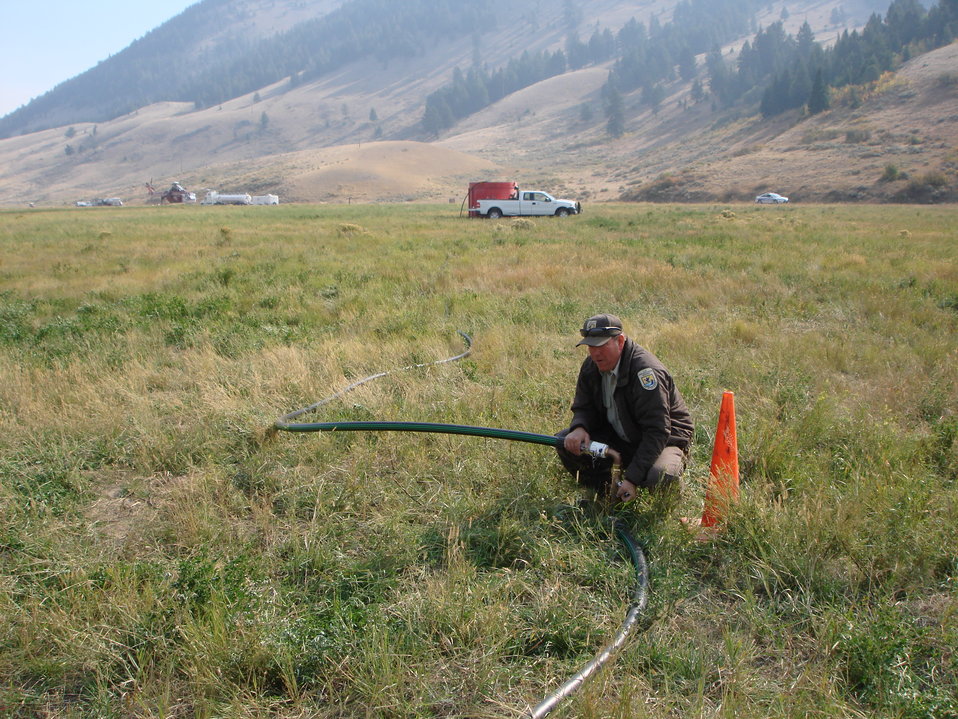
Modifying the Refuge Irrigation System

Kirk Hayenga, Maintenance Worker for the National Elk Refuge, modifies the refuge's irrigation system in order to supply water to the portable fire retardant mixing plant.